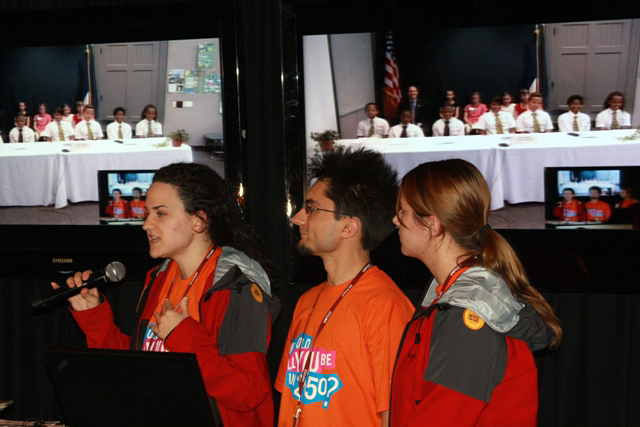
Youth Delegation at COP-15

Members of the youth delegation at COP-15 participate in a DVC with U.S. students in Washington and Virginia sponsored by the U.S. Forest Service at the U.S. Center at COP15, Bella Center, Copenhagen, Denmark on December 11, 2009.